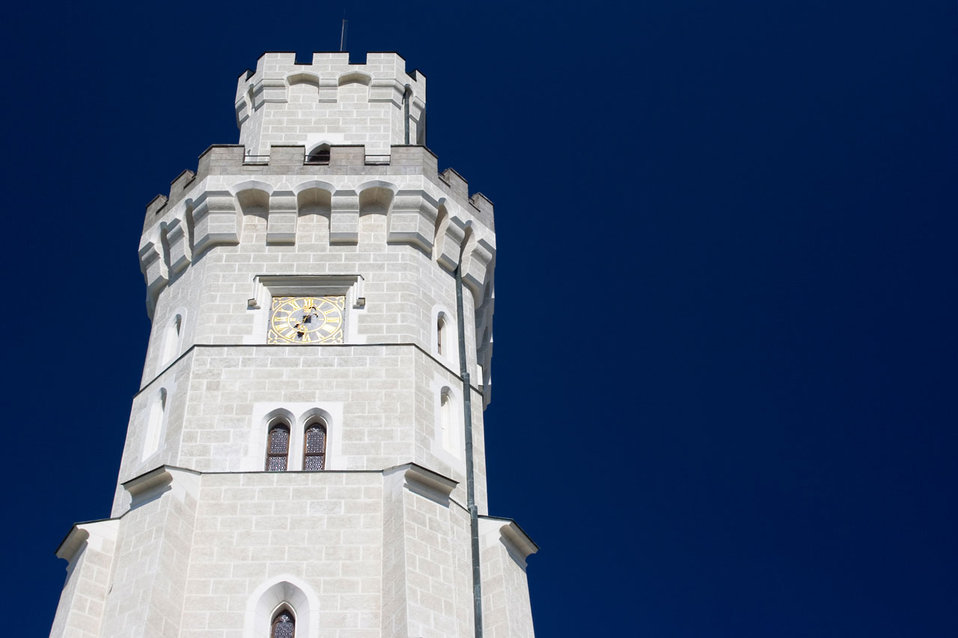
Hluboka castle tower

A castle tower in hluboka in south of bohemia.